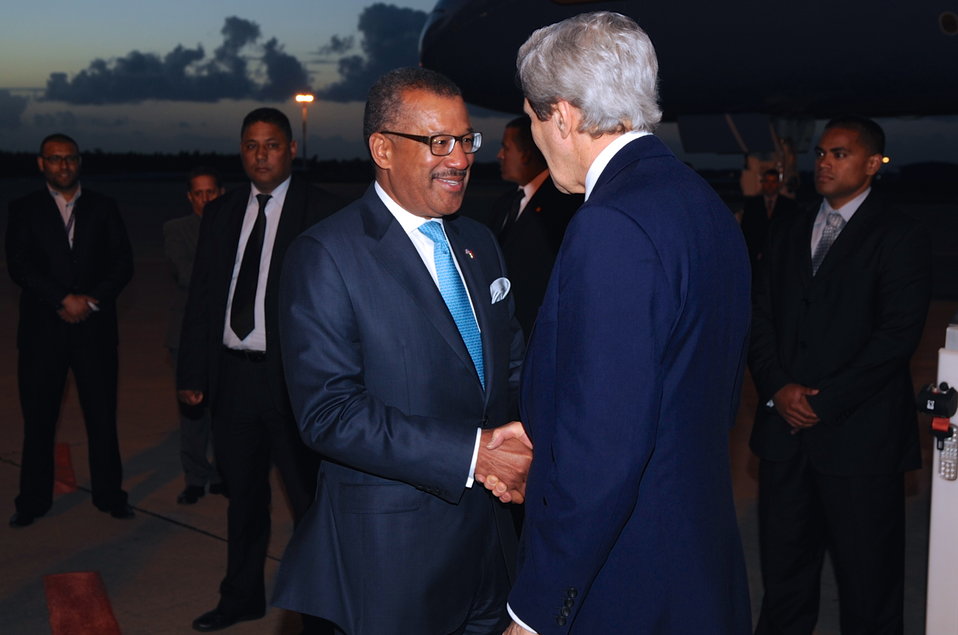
Ambassador Bush Greets Secretary Kerry Upon His Arrival in Morocco

Newly installed U.S. Ambassador to Morocco Dwight Bush greets U.S. Secretary of State John Kerry in Rabat, Morocco on April 3, 2014 before a Strategic Dialogue between the two countries.